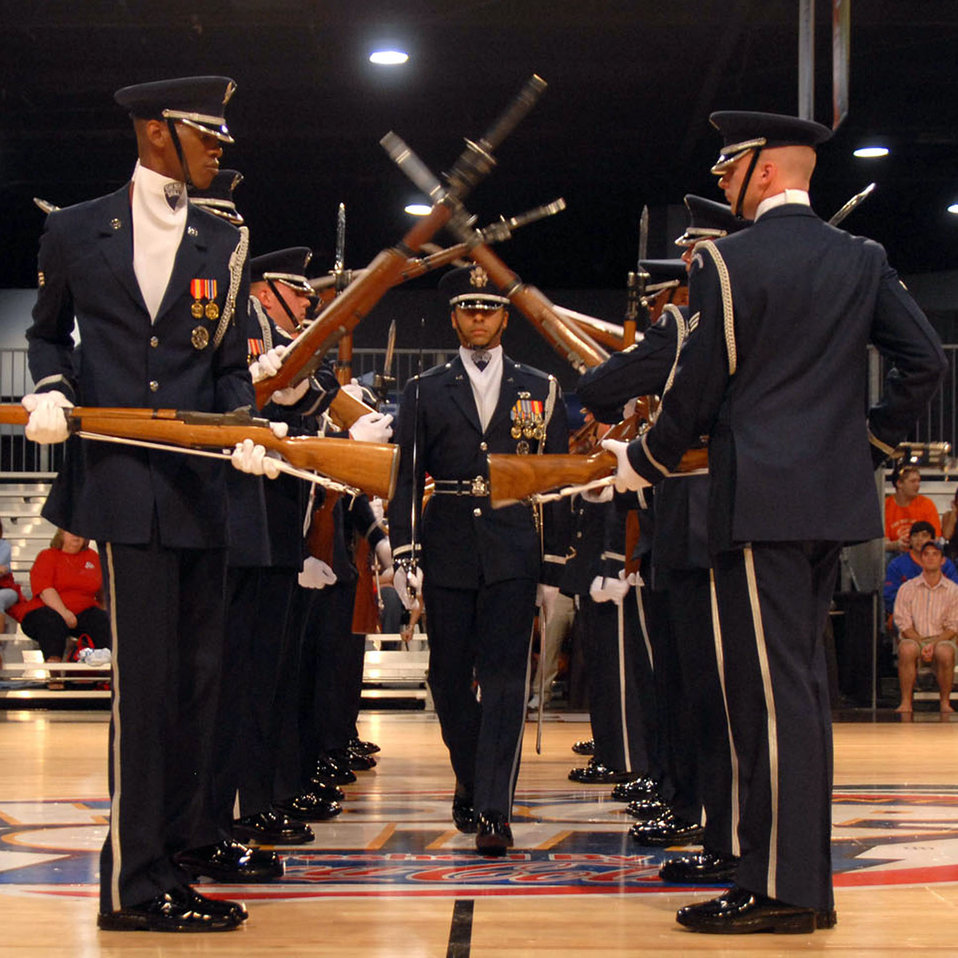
Honor Guard Drill Team keeping sharp for Air Force

First Lt. Joshua Hawkins walks through the spinning rifles of the Air Force Honor Guard Drill Team during their performance at Hoop City, an event surrounding the NCAA Final Four, April 1 in Atlanta. The drill team recently returned from their latest 11-day tour around the U.S., that included visits to Atlanta; Hill Air Force Base, Utah; and Salt Lake City.